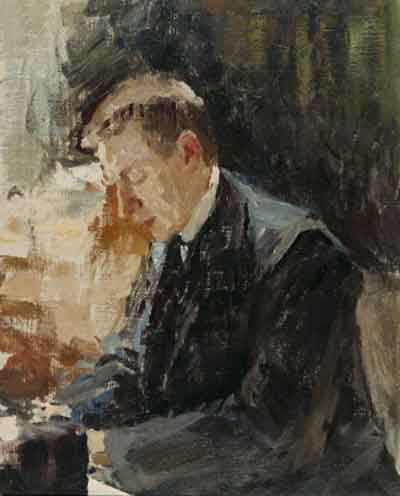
Portrait of Sergei Rachmaninoff